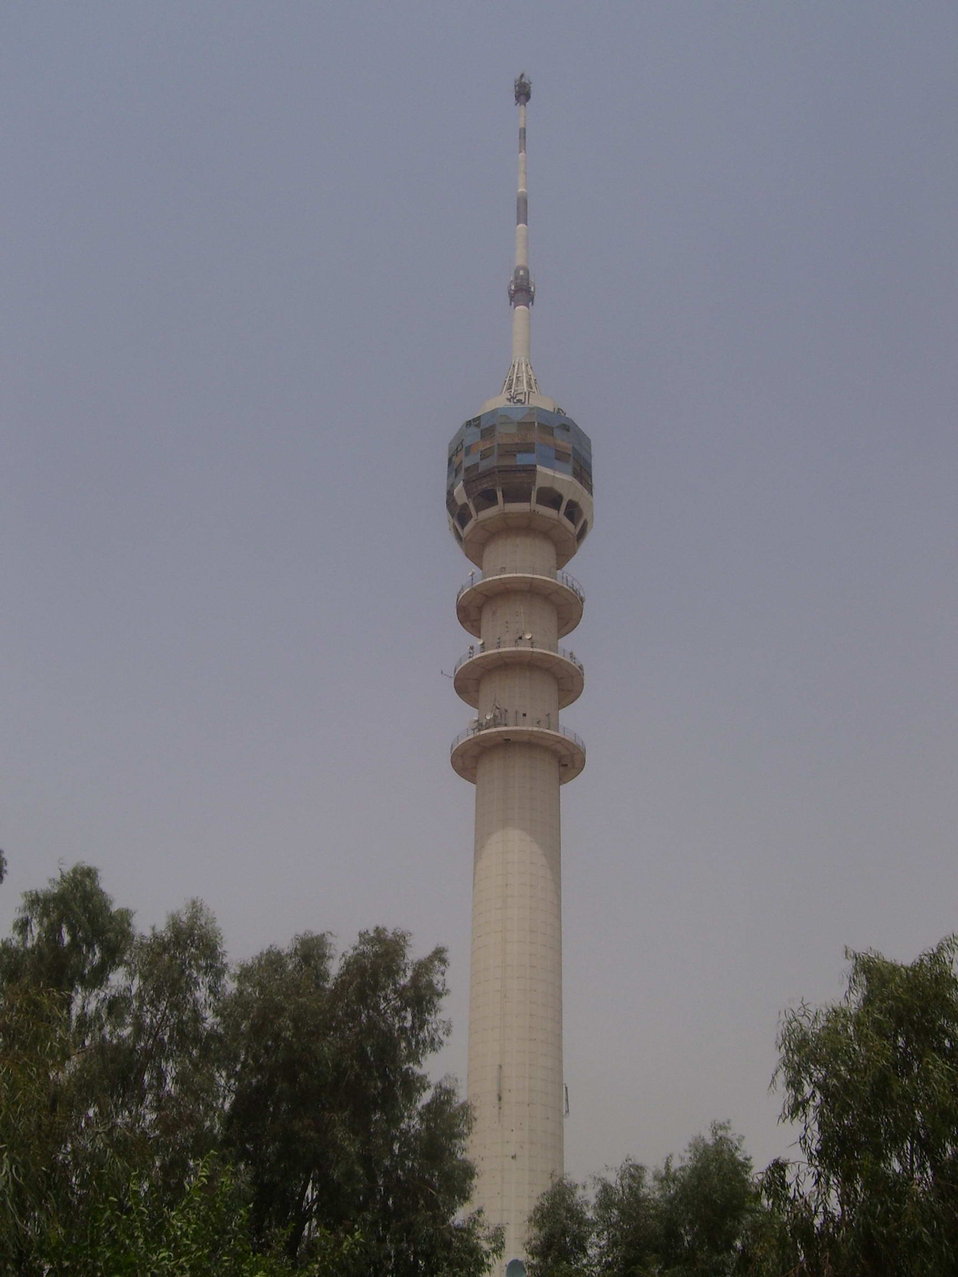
Baghdad Tower Deutsch: Fernsehturm Bagdad